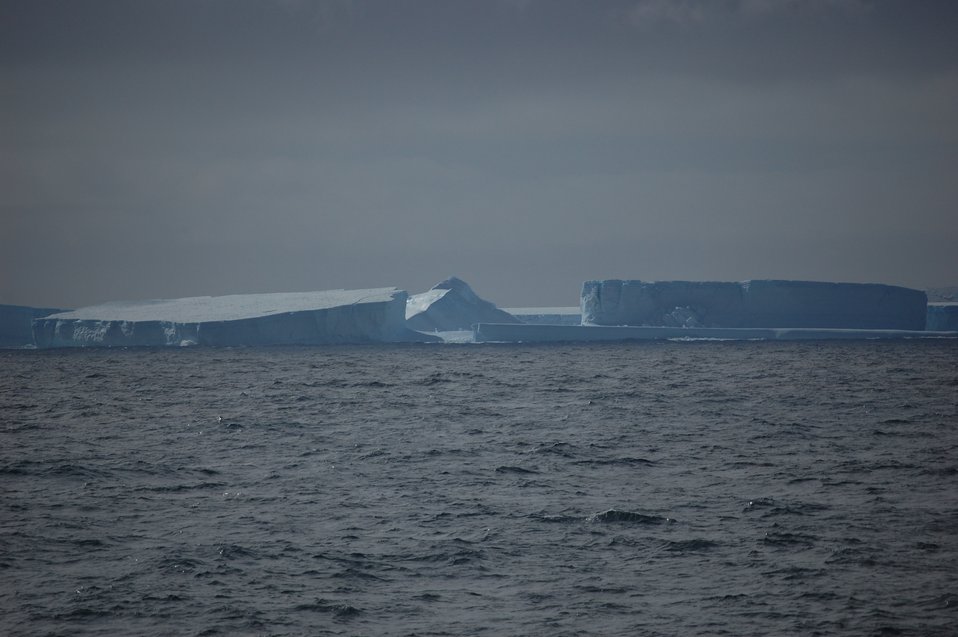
Icebergs